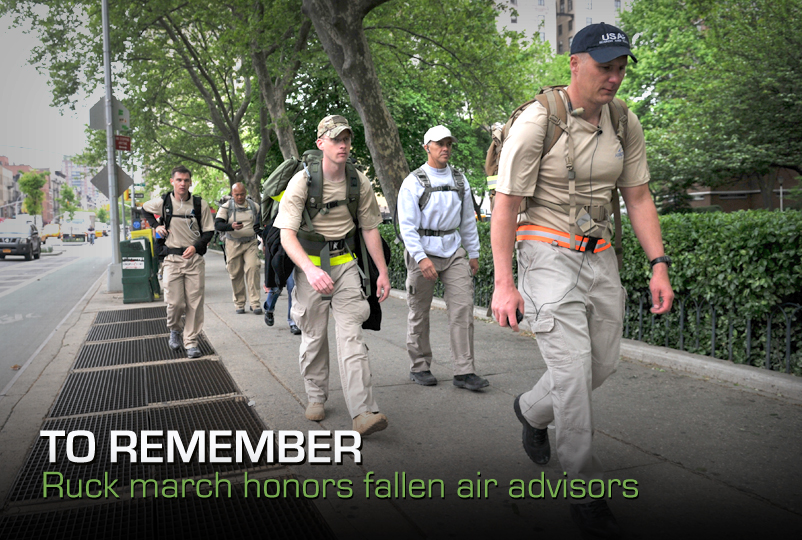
To Remember